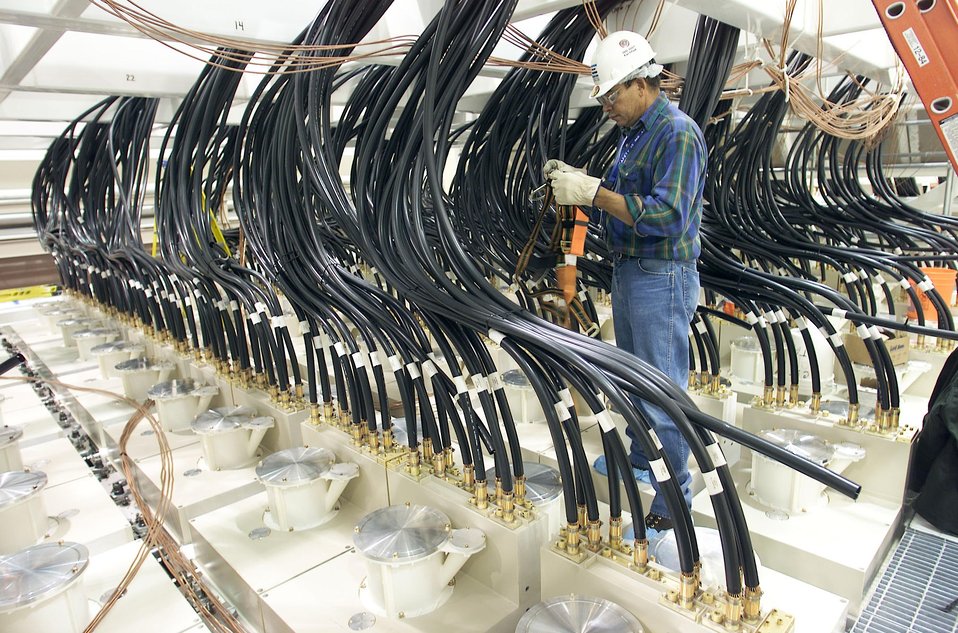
CABLE INSTALLATION FOR CLUSTER 3 MAIN AMPLIFIER POWER CONDITIONING SYSTEM.

THE NATIONAL IGNITION FACILITY AT LLNL ENABLES KEY PROGRAMS AND TECHNOLOGIES THAT SUPPORT DOE'S NATIONAL NUCLEAR SECURITY ADMINISTRATION DEFENSE PROGRAMS AND LLNL MISSIONS, ENSURING THAT THE NATION'S NUCLEAR WEAPONS REMAIN SAFE, SECURE AND RELIABLE. NIF, ONE OF THE CORNERSTONES OF DOE'S STOCKPILE STEWARDSHIP PROGRAM, WILL INTEGRATE THE INERTIAL CONFINEMENT FUSION PROGRAM INTO THE OVERALL STOCKPILE STEWARDSHIP PROGRAM AND FOSTER THE DEVELOPMENT OF ASSOCIATED LASER TECHNOLOGIES.